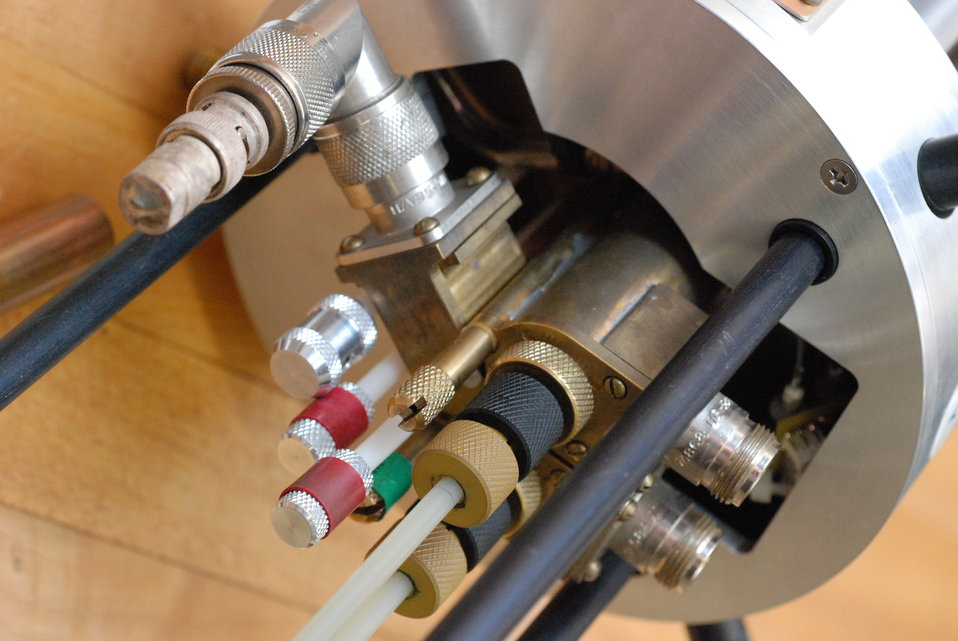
THE CONTROL KNOBS ON A NUCLEAR MAGNETIC RESONANCE (NMR) PROBE USED BY AMES LABORATORY RESEARCH GROUP.

Ames Laboratory is a research lab for the Department of Energy that seeks solution to energy related problems through the exploration of chemical, engineering, materials, mathematical and physical.